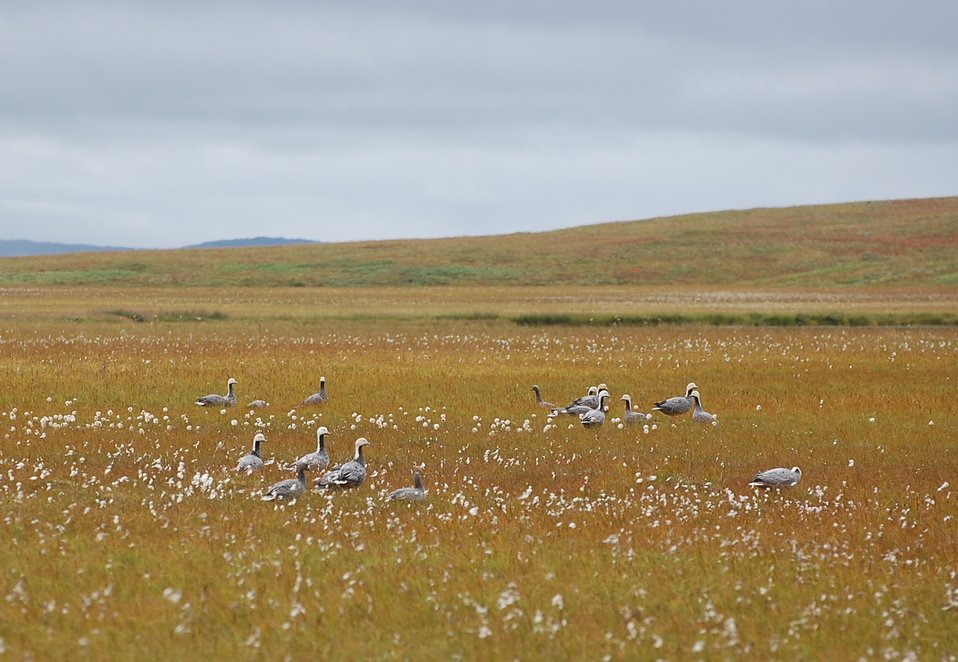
Emperor Geese

Izembek National Wildlife Refuge